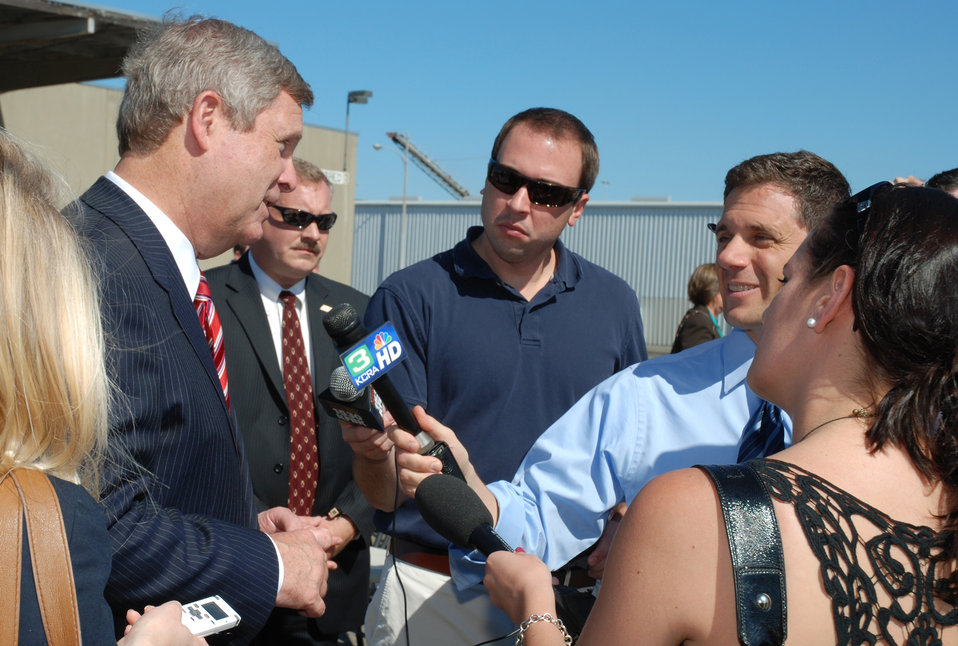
20110926-OSEC-JC-0018 flickr

Agriculture Secretary Tom Vilsack speaking to the media at the American Jobs Act media availability at the Port of Sacramento, West Sacramento, CA, on Monday, September 26, 2011.